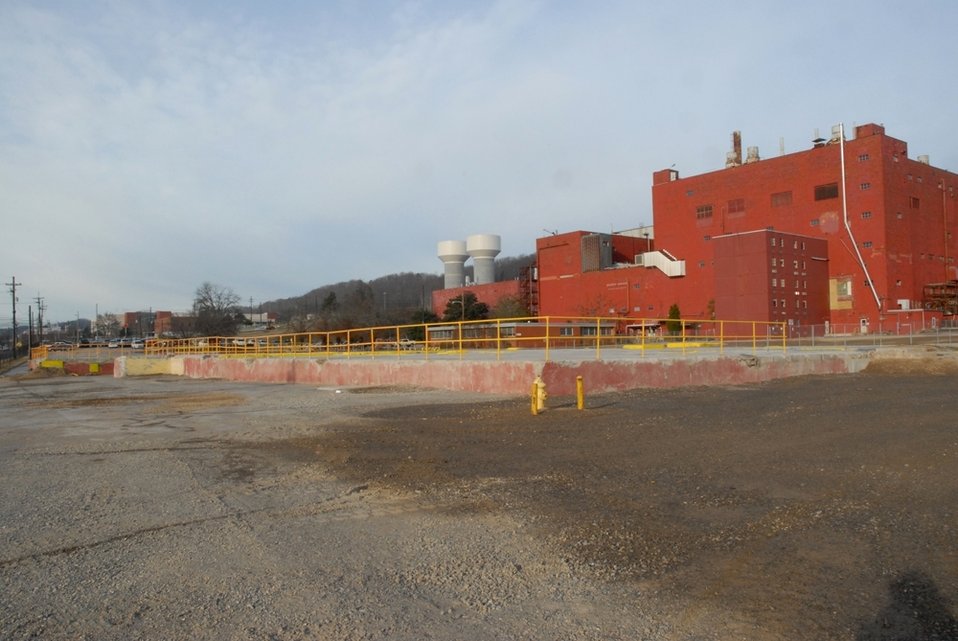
After Photo Building 9211

The Y-12 National Security Complex used Recovery Act funds to demolish four Biology Complex facilities. These photos show the site of Building 9211 before and after demolition.